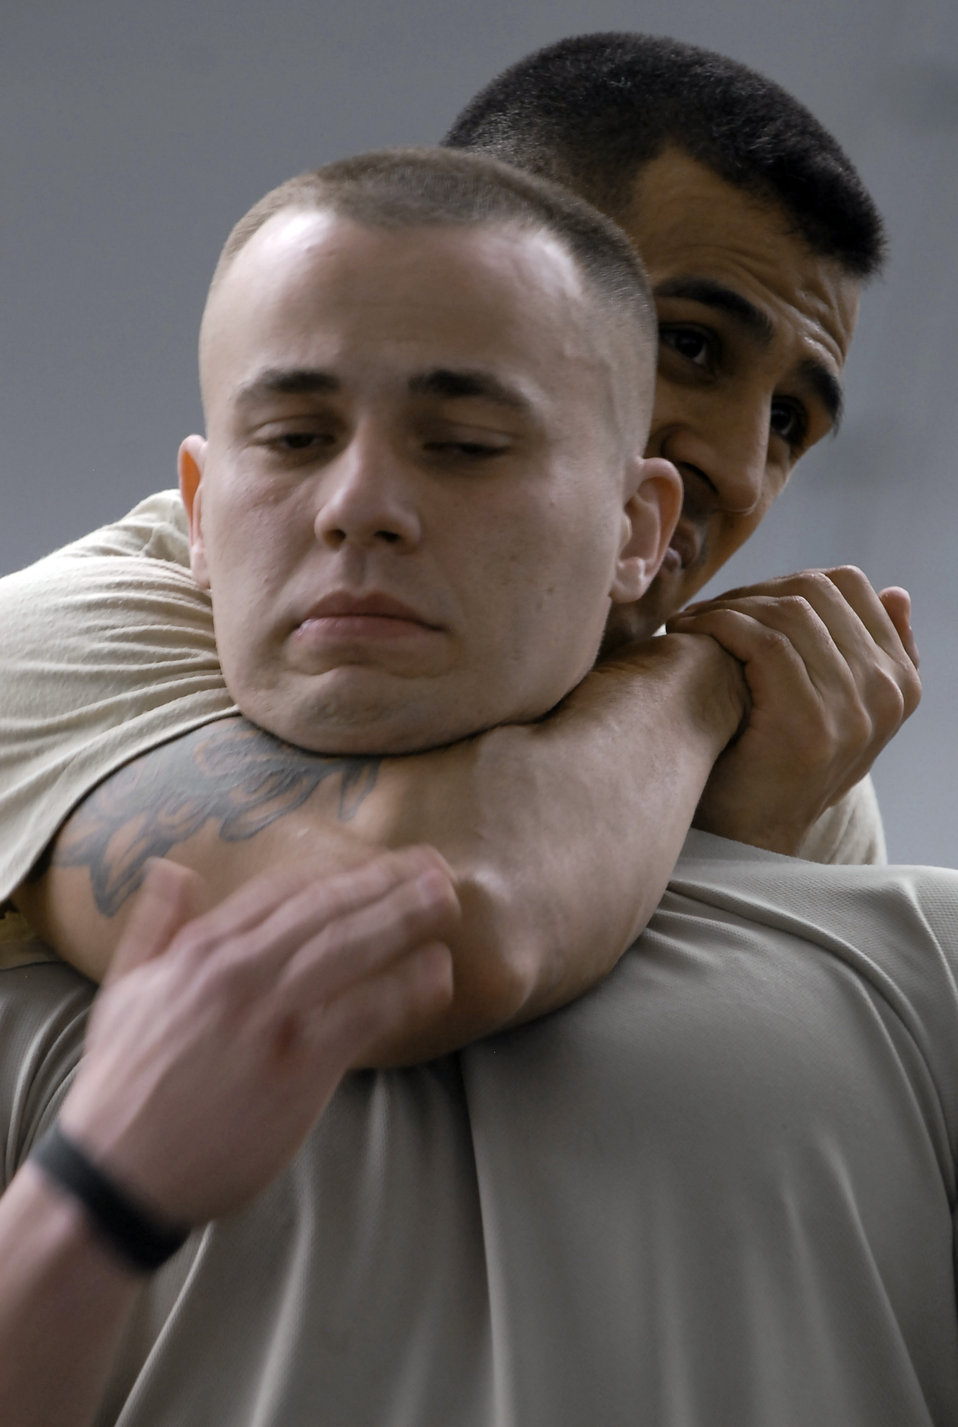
Luke Airmen train for combat

Staff Sgt. Abel Telles (right), executes a rear choke to Staff Sgt. Wesley Thurner during his tan belt performance test during a military combative training course April 5, 2010, at Luke Air Force Base, Ariz., Completion of this test earns participants a tan belt in martial arts. Sergeant Telles is a 56th Logistics Readiness Squadron fuels specialist. Sergeant Thurner is a 56th Communications Squadron assistant noncommissioned officer in charge of voice network service